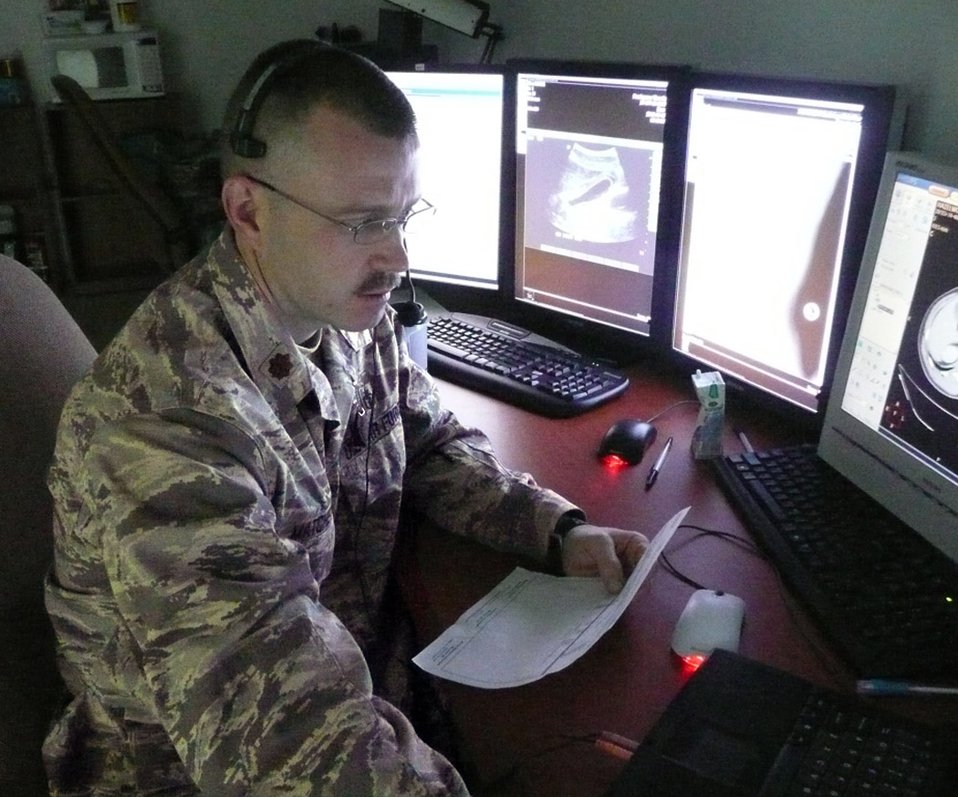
New Voice Recognition Medical Capabilities

Maj. Michael Matchette, an Air Force radiologist at the Air Force Theater Hospital at Balad Air Base, Iraq, uses voice recognition software to quickly dictate his radiology readings electronically into the Medical Communications for Combat Casualty Care, or MC4, system.